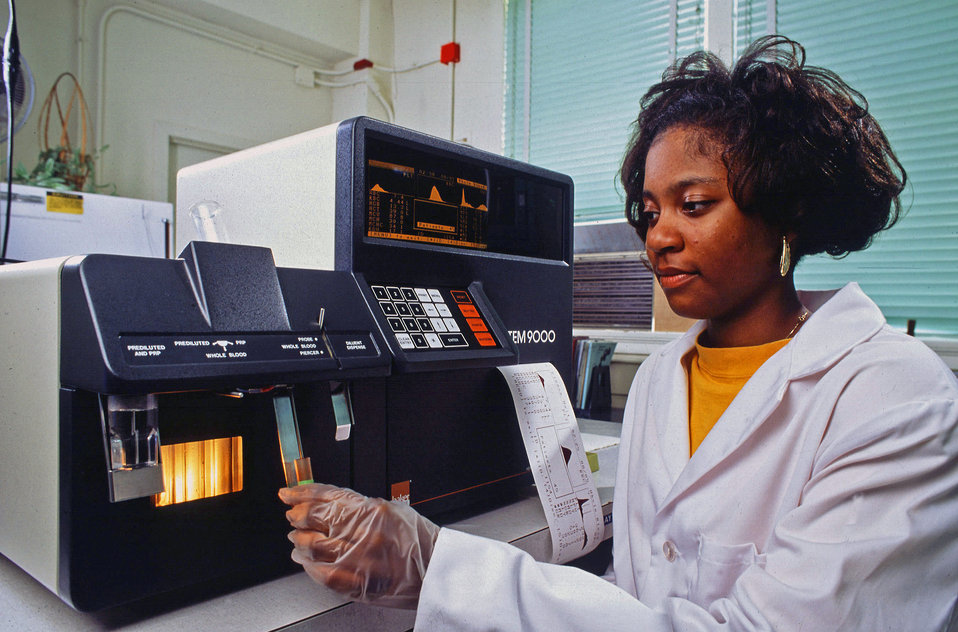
High school senior Danielle Spearman counts blood platelets at the U.S. Department of Agriculture’s (USDA) Agriculture Research Service (ARS) Human Nutrition Research Center in Beltsville, MD.